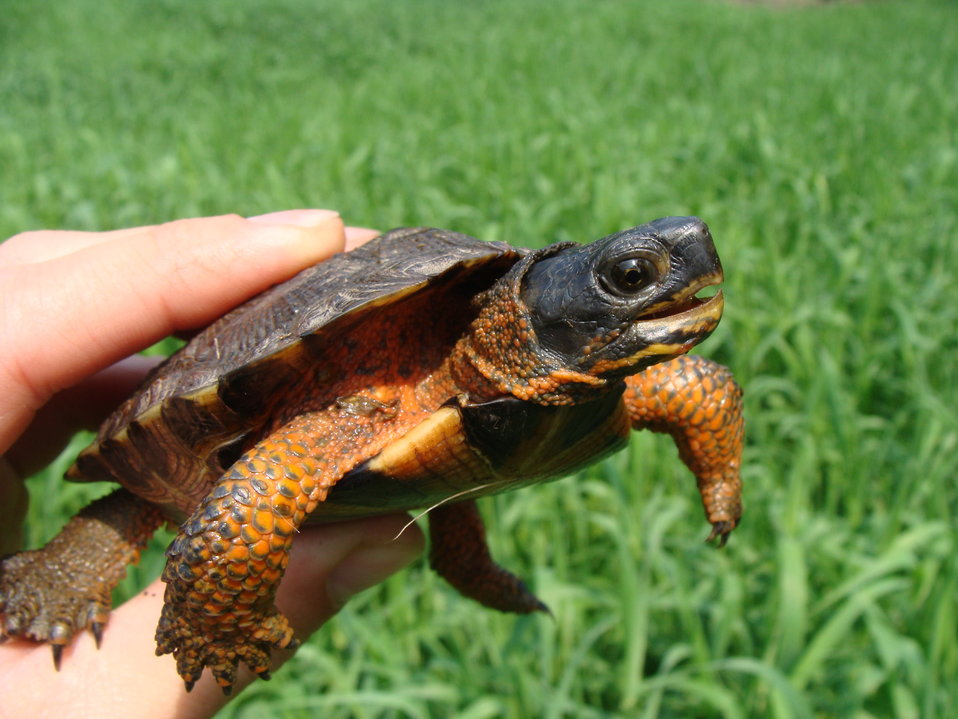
Juvenile Wood turtle at Great Swamp National Wildlife Refuge